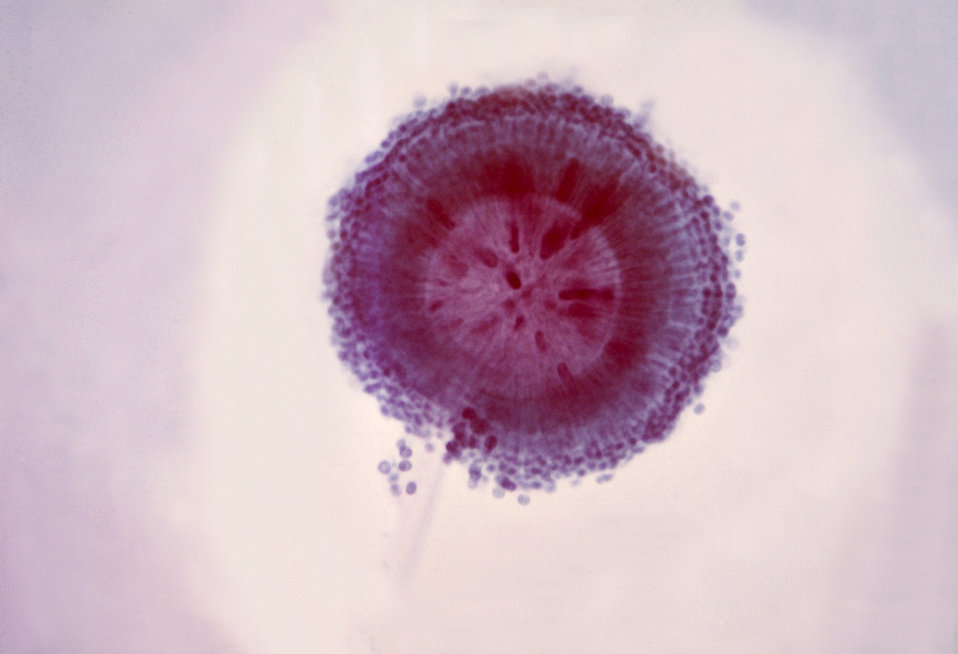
Conidial head of an Aspergillus niger fungal organism showing a double row of sterigmata.